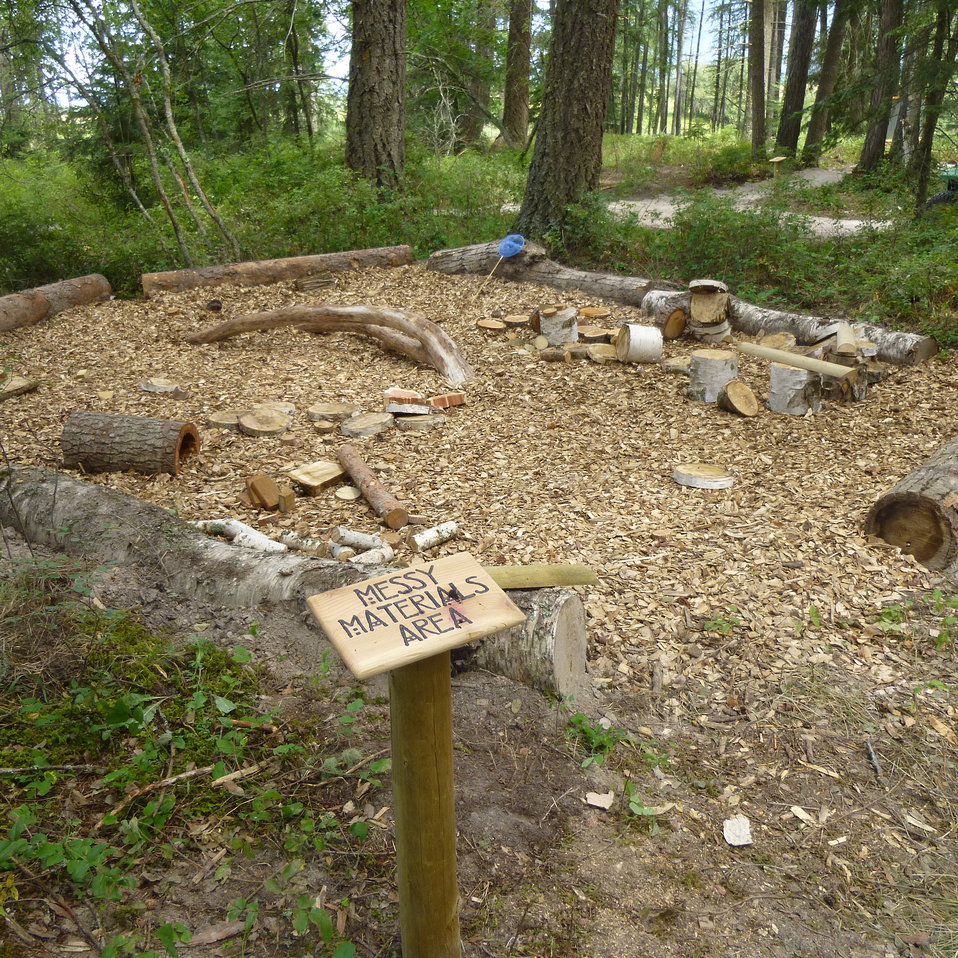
Creston National Fish Hatchery and Nature Explore Outdoor Classroom

The Messy Material Area provides children with natural materials to foster imagination, creativity, and abstract thinking.